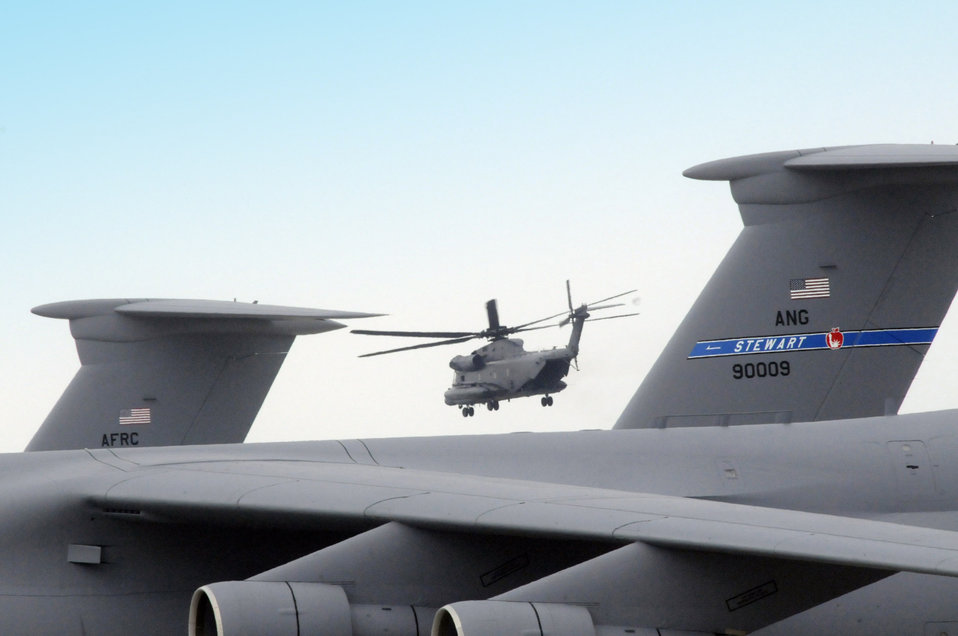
One last flight

An MH-53 Pave Low makes one of its last flights Aug. 8 as it flies past two C-5 Galaxies at Robins Air Force Base, Ga. The aircraft is destined to be on display at the Museum of Aviation at Warner Robins, Ga.